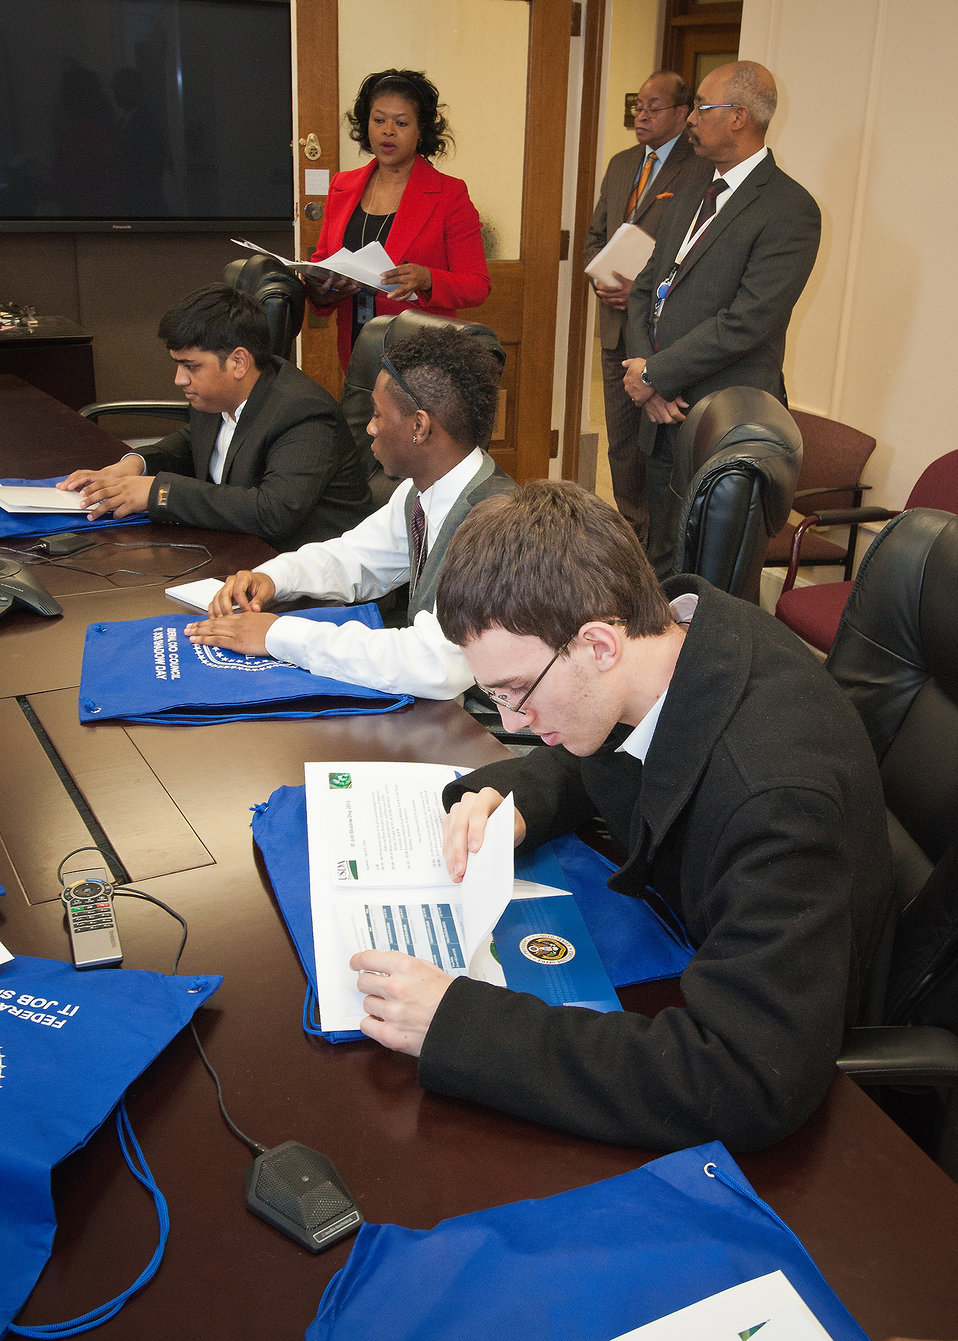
U.S. Department of Agriculture (USDA) Office of the Chief Information Officer (OCIO) Associate Chief Yvonne Jackson explains the depth and breadth of Information technology services to students from Edison Academy in Fairfax, VA during the annual USDA Information Technology (IT) Job Shadow Day held by the USDA OCIO to introduce local high school students to careers in information technology in Washington, D.C. on Tuesday, Apr. 2, 2013.